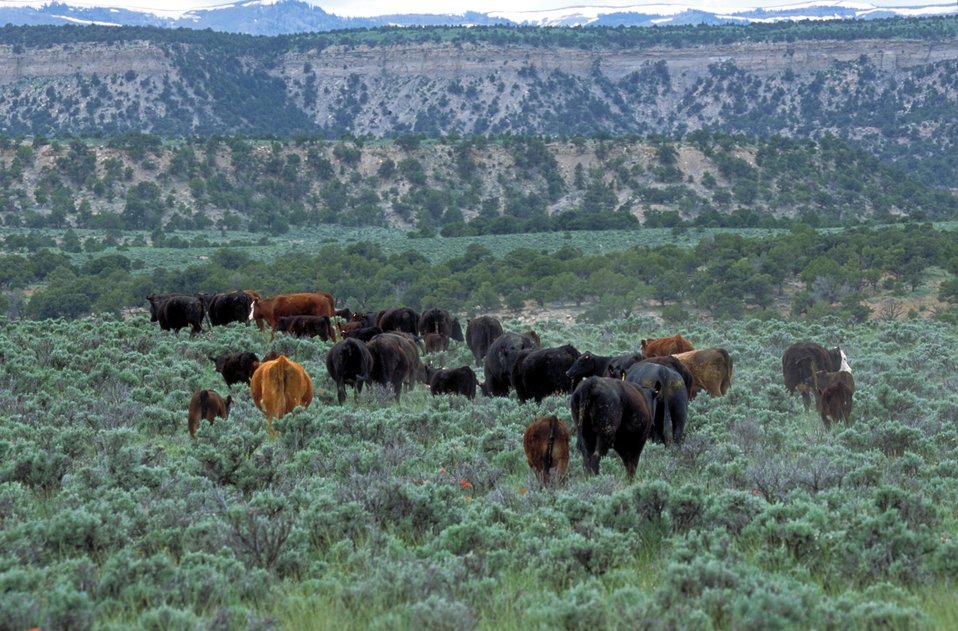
Livestock grazing on BLM lands near Price, Utah.